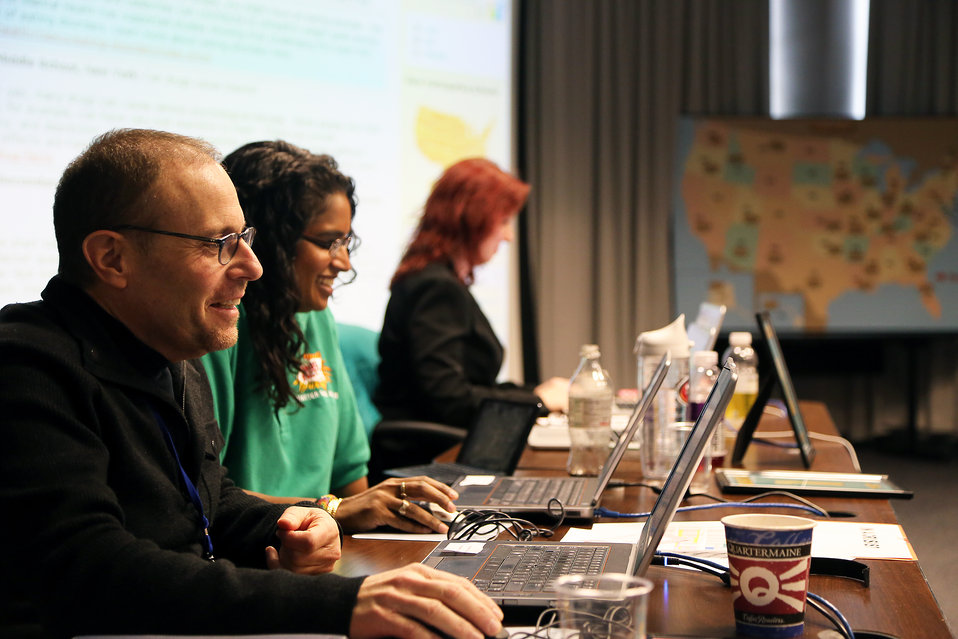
NIDA Chat Day 2014

Chat Day Event held by the National Institute on Drug Abuse during its National Drug Facts Week Jan. 27-Feb. 2, 2014. Scientists from NIDA and other agencies answered questions about drugs from teens around the world on Jan. 29th in Rockville, Maryland.